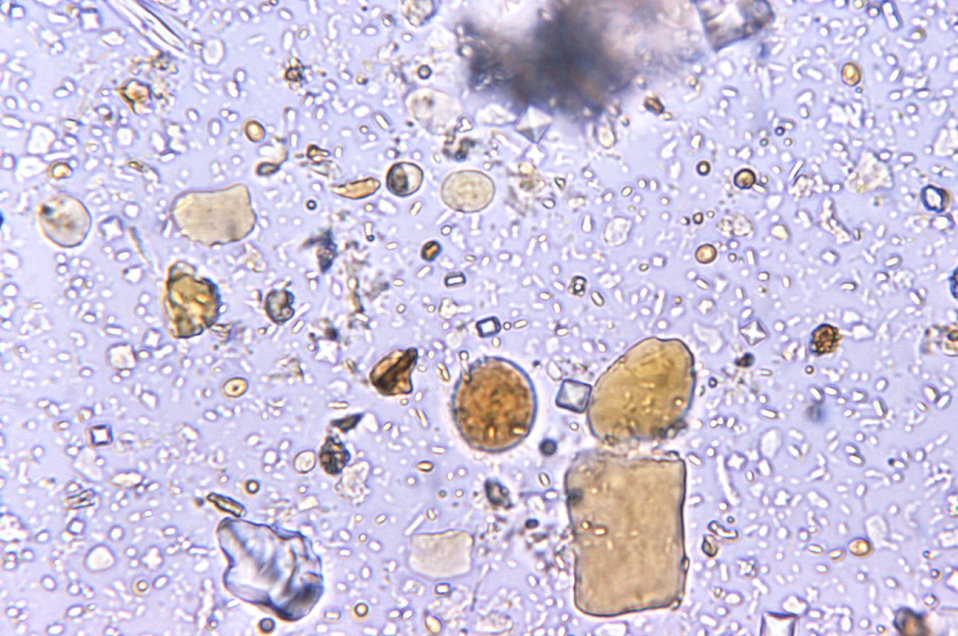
Magnified 500X, this iodine-stained, concentrated, direct mount photomicrograph revealed the presence of a cyst of the protozoan parasite, Entamoeba coli. This is one intestinal parasite, which lives as a commensal organism, existing harmlessly in the human digestive tract. Of importance, is the fact that this organism can often be confused with its pathogenic counterpart, E. histolytica.